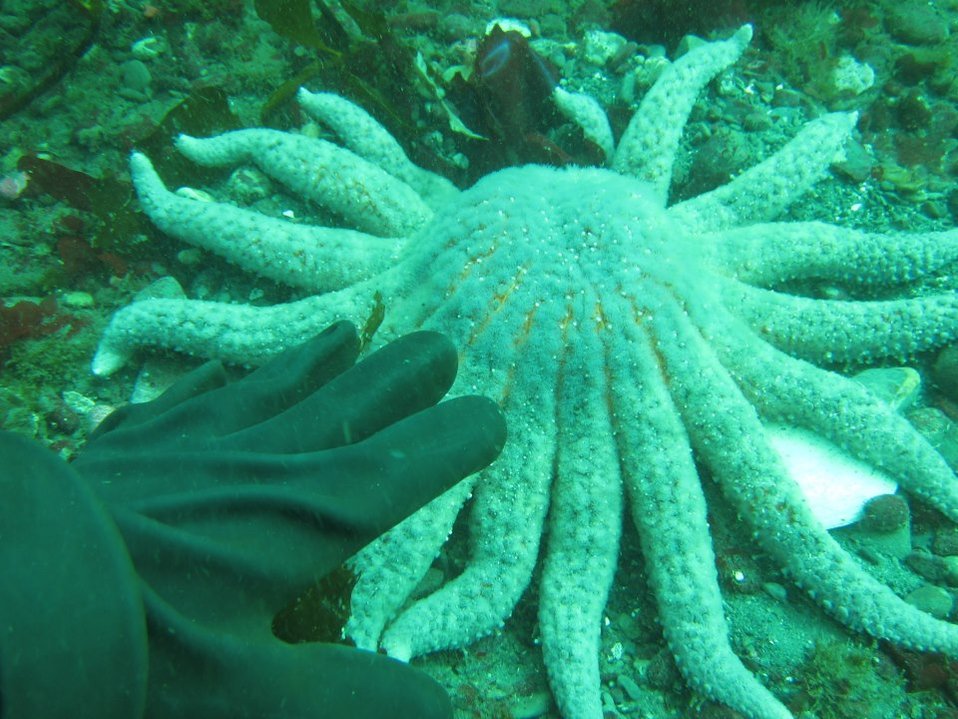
July 26, 2012 Elwha Dam Removal, diver's hand next to a Sunflower star

Sunflower star (Pycnopodia helianthoides) along the Elwha River dam removal survey transect. Divers are looking to compare what they see from previous surveys in the area. Species die off or increasing abundance during and after dam removal can reveal the effectiveness of the dam removal technique, and be instructive for dam removal efforts elsewhere.

See more photos and ask questions of EPA Divers at www.facebook.com/EPAdivers

Photo (and left hand) of Scott Grossman, EPA-ERT.